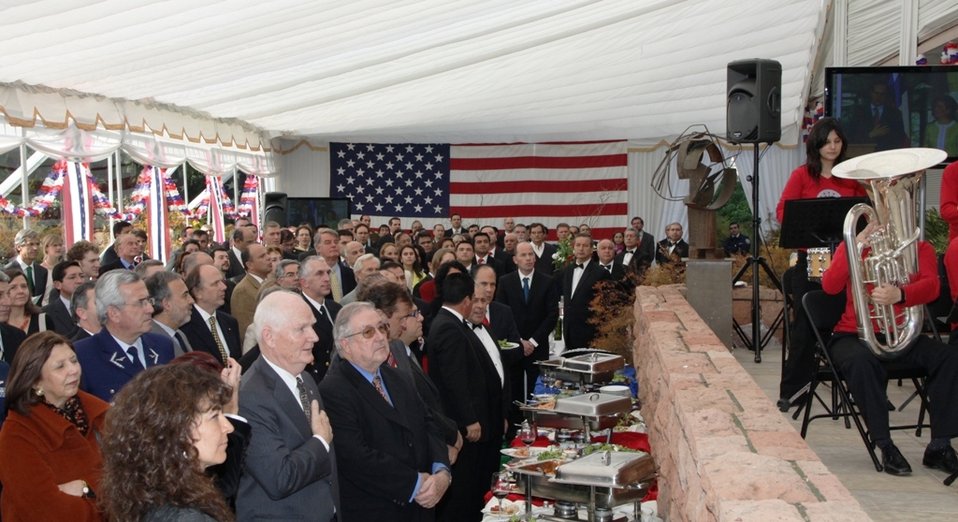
Guests Sing U.S. and Chilean National Anthems

Guests sing along as the Chilean Air Force band plays the U.S. and Chilean national anthems at the U.S. Independence Day reception at the U.S. Ambassador to Chile Paul Simons' residence in Santiago, Chile, on July 2, 2010.